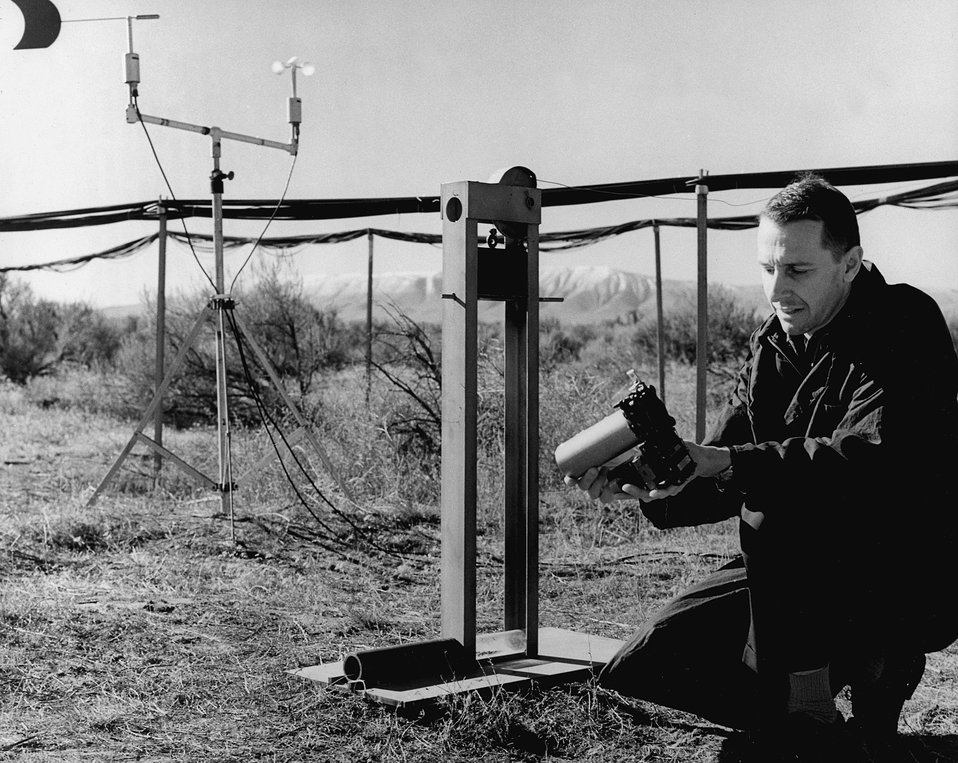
Recent studies at the Energy Research & Development Administration's Pacific Northwest Laboratory have made it possible, for the first time, to measure the short-term variations of concentration in puffs of a pollutant in the atmosphere. c. 1972